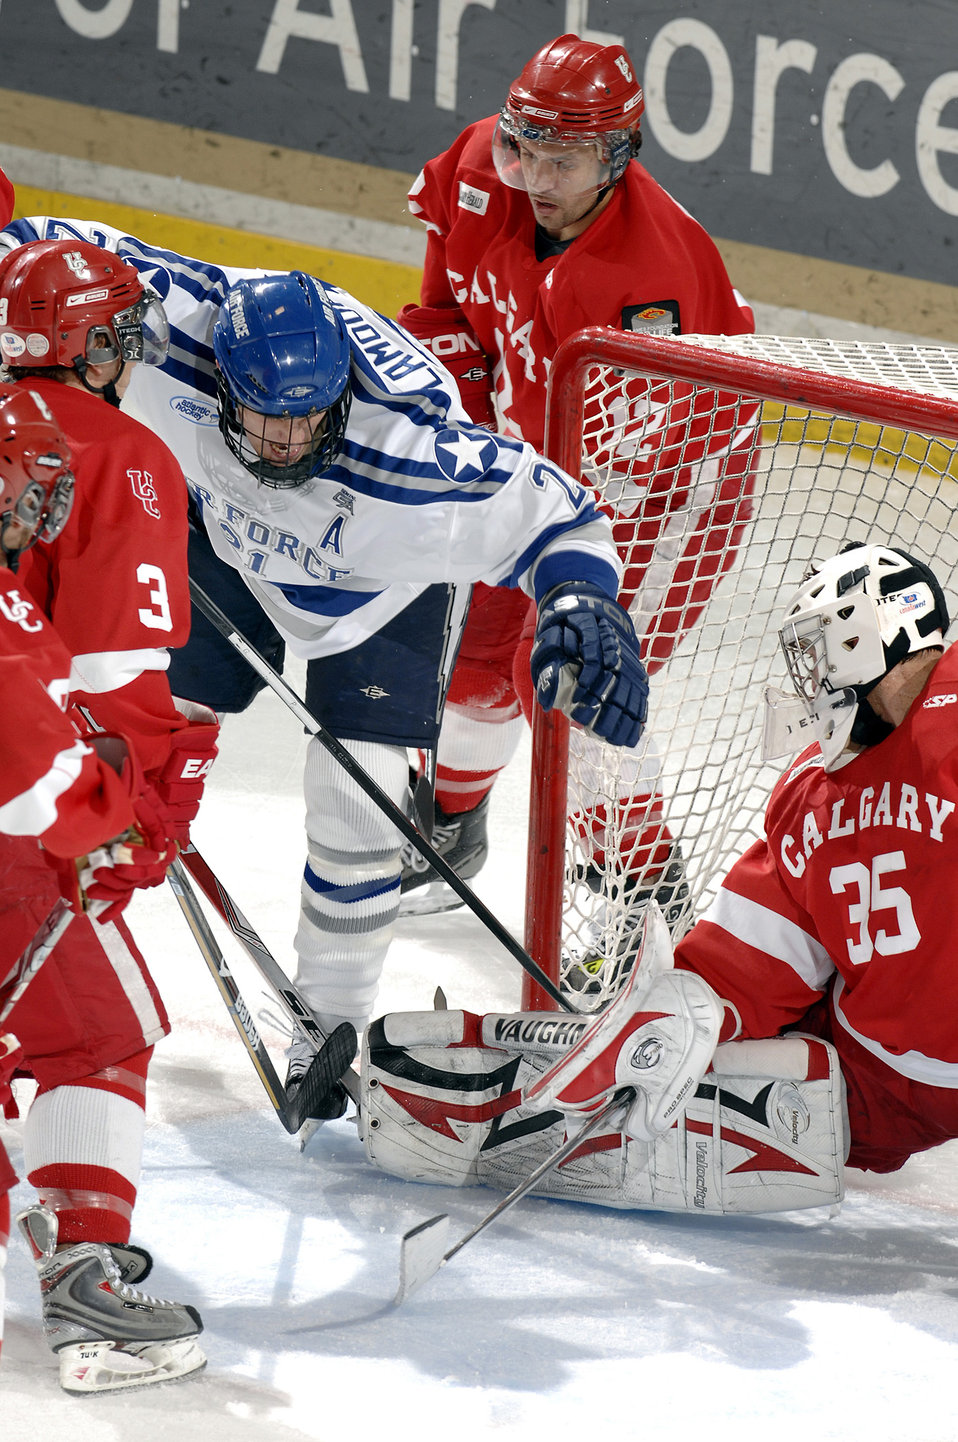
Lamoureux scores two in 3-1 win over Calgary

U.S. Air Force Academy, CO -- Junior forward Jacques Lamoureux scores one of his two goals against Calgary during the Falcons-Dinos exhibition game at the Cadet Ice Arena Oct. 5. Air Force won the match 3-1 and will play its first game of the regular season at Bemidji State in Bemidji, Minn., Oct. 9.